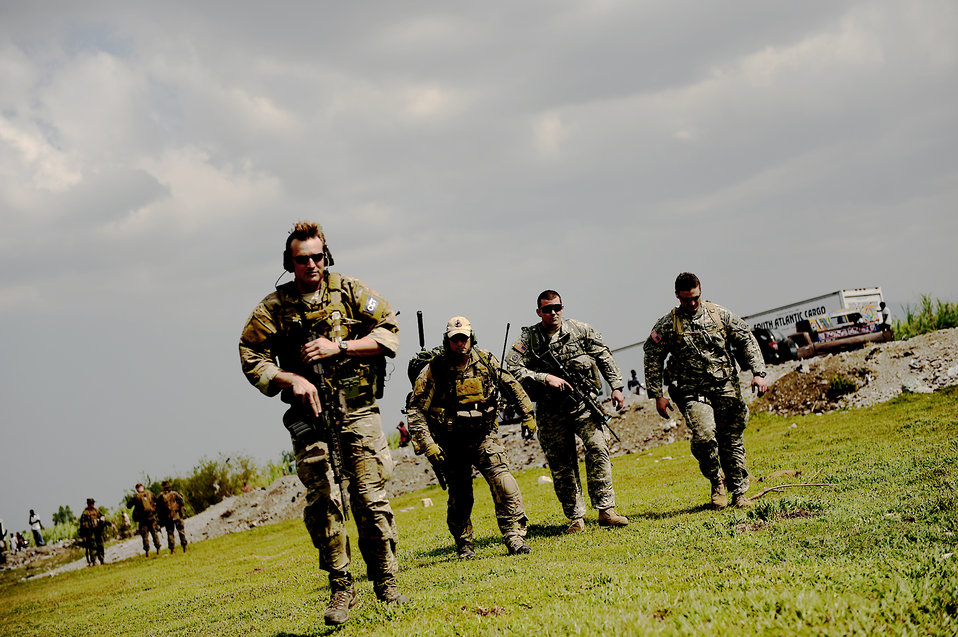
Joint team conducts drop zone survey

U.S. Air Force combat controllers and U.S. Army pathfinders survey an area as a possible drop zone outside Port-au-Prince, Haiti, Jan. 24, 2010, during Operation Unified Response.